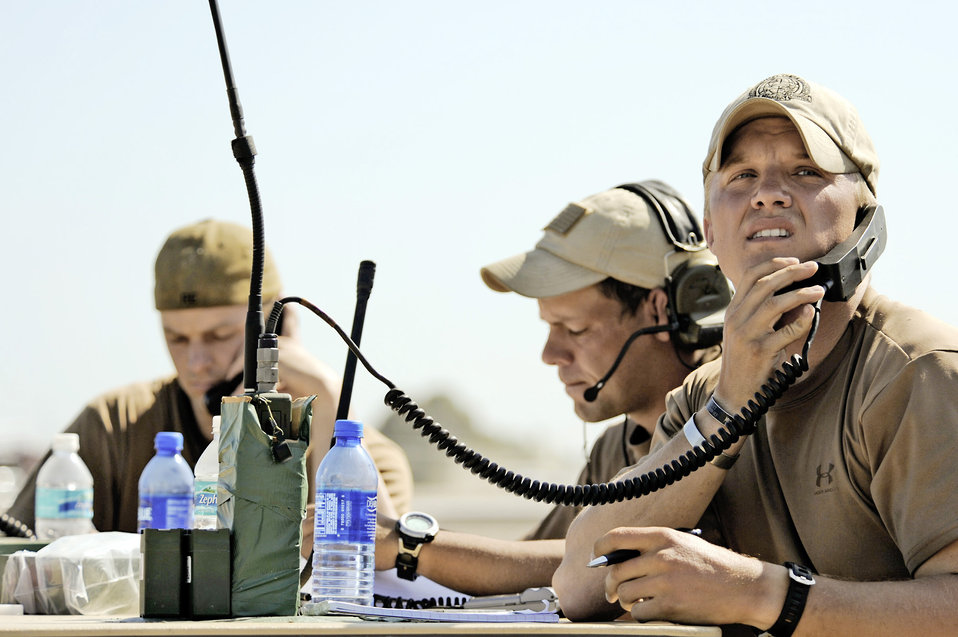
Combat controllers bring order during chaotic times

Combat controllers talk to aircraft circling the Toussaint L'Ouverture International Airport Jan. 23, 2010, in Port-au-Prince, Haiti. The Airmen are from the 23rd Special Tactics Squadron at Hurlburt Field, Fla.